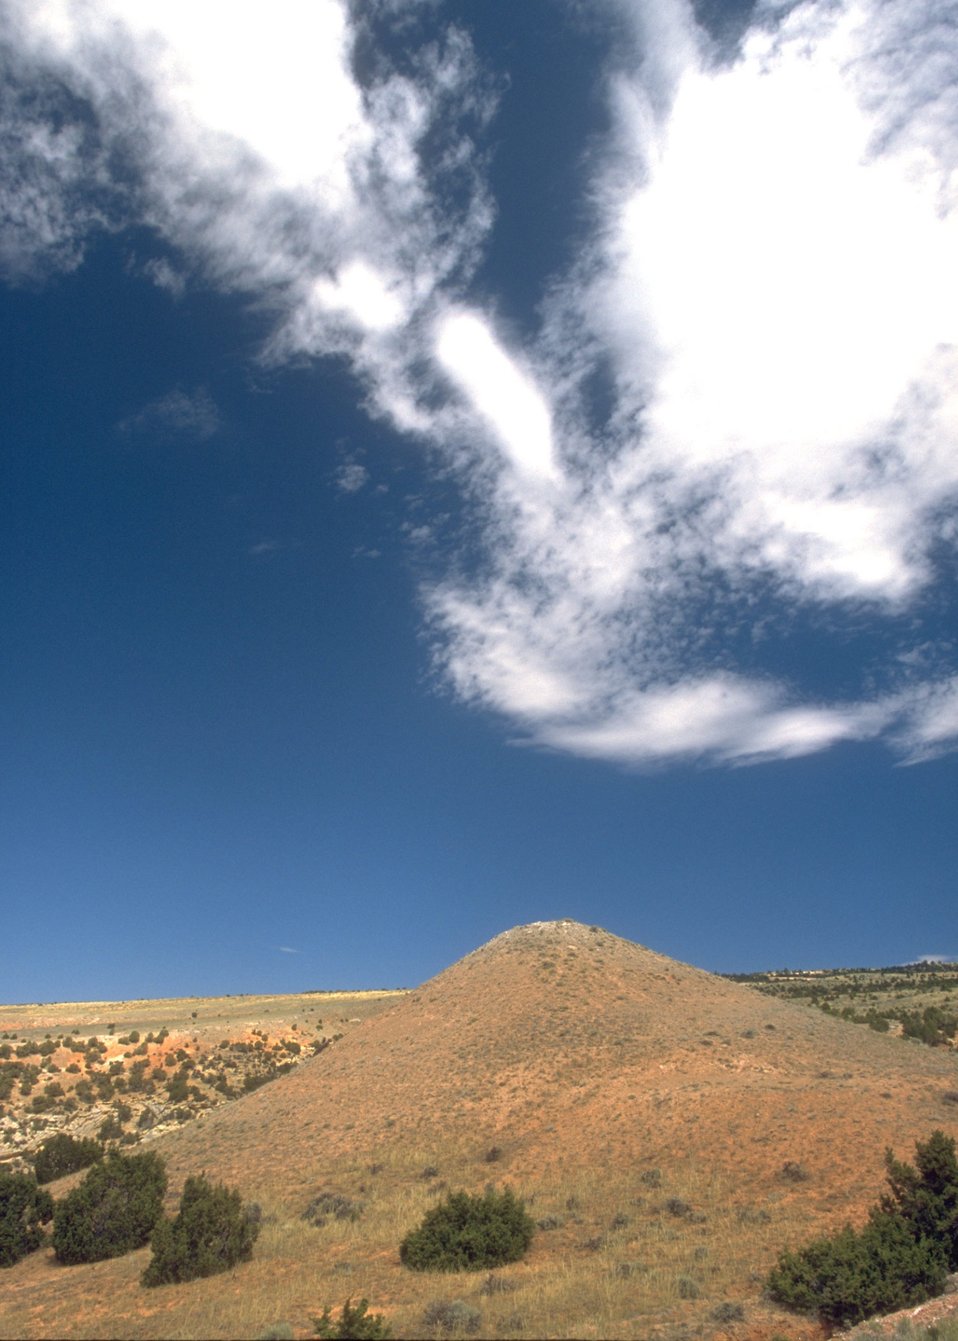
View along the Red Gulch/Alkali Back Country Byway, Worland Field Office.